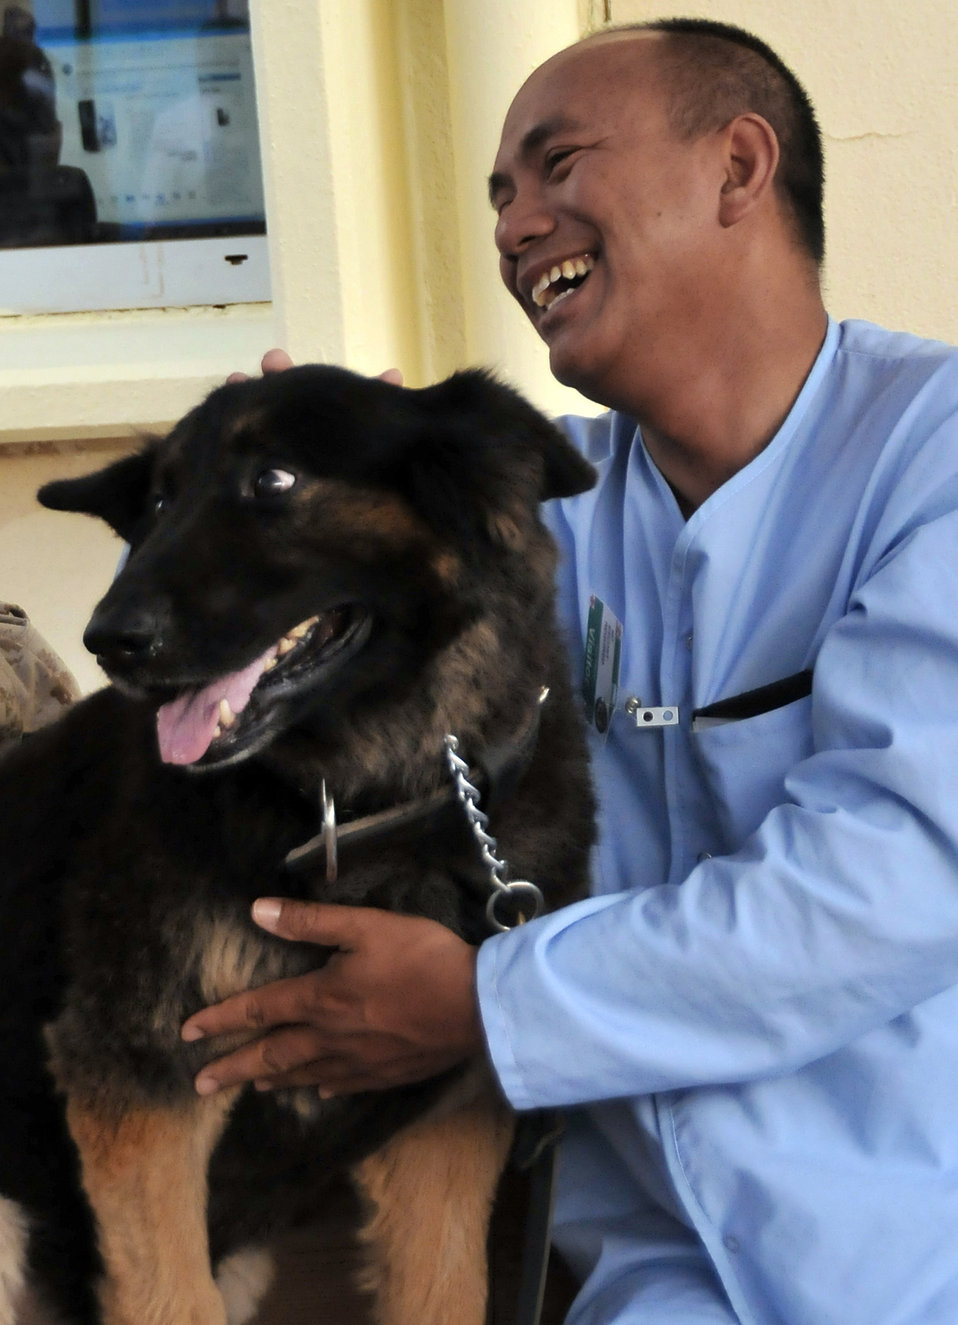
Airmen 'unleash' new recovery program for patients

Army Spc. Than Kywe shares a laugh with Cezar, a 332nd Expeditionary Security Forces Group explosives-detection military working dog, during the first session of the K-9 Visitation Program May 15 at Joint Base Balad, Iraq. Specialist Kywe is an Air Force Theater Hospital patient. The program works to further patient recovery after injury or illness through animal-assisted therapy.